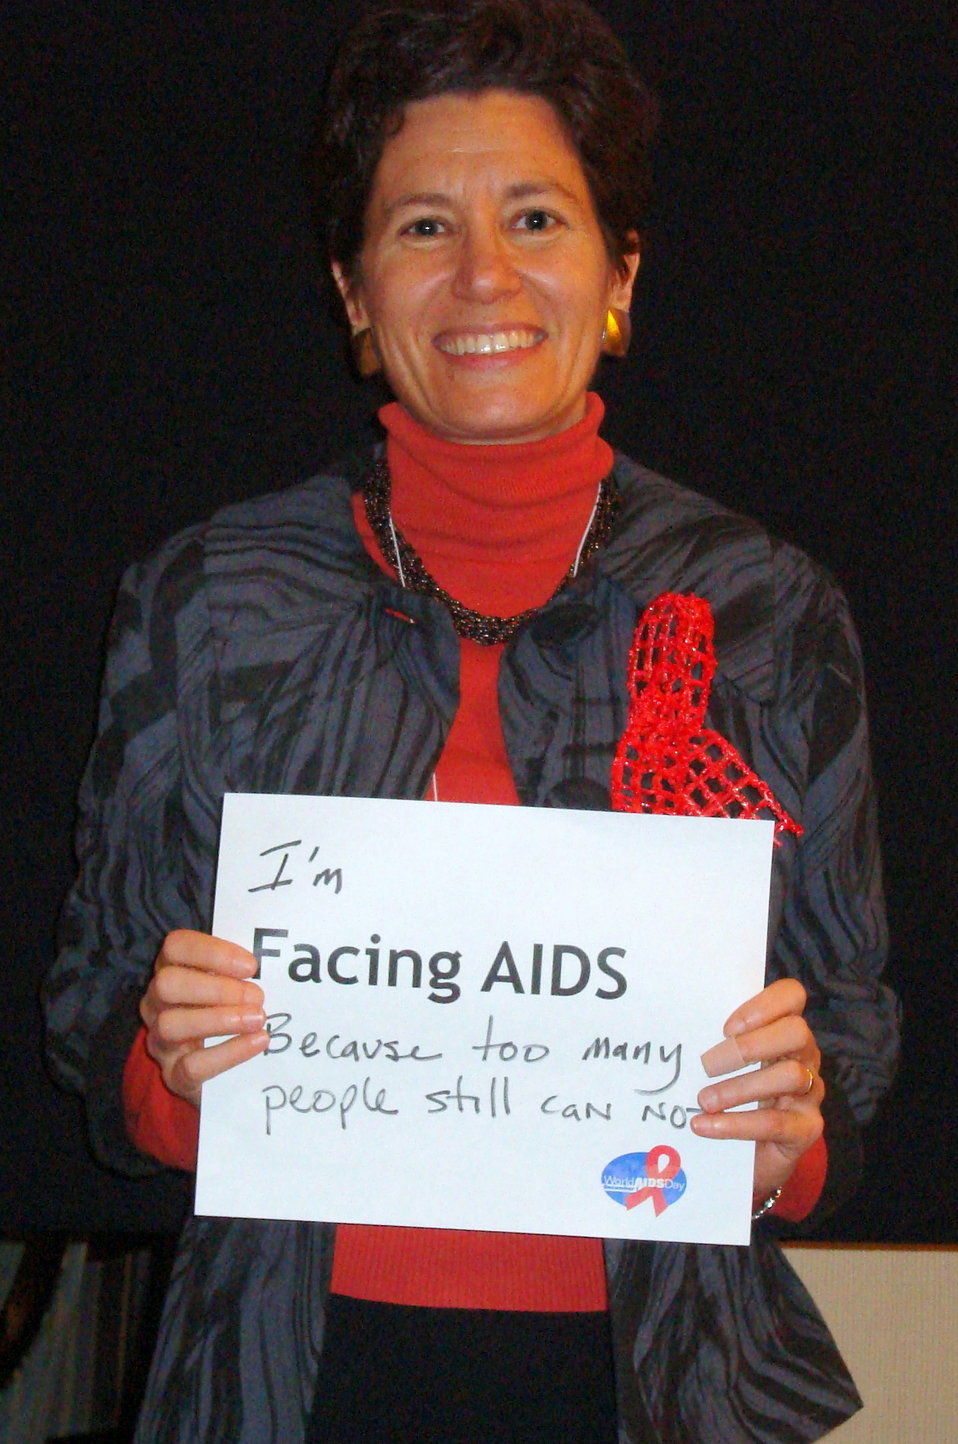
FacingAIDSCampaign 015